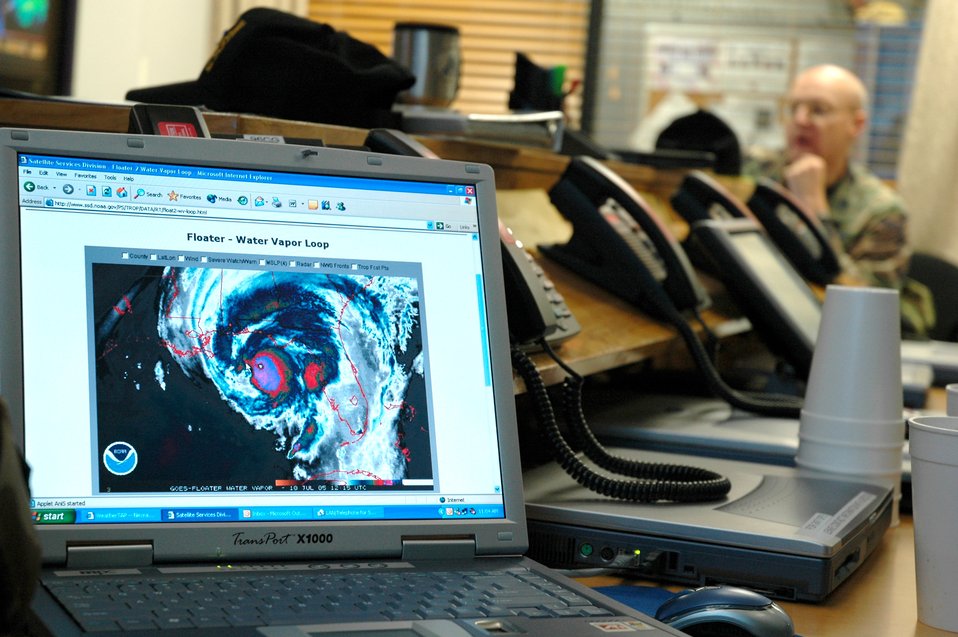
Hurricane response

The 46th Weather Squadron at Eglin Air Force Base, Fla., monitored Hurricane Dennis -- in July 2005 -- from the time it became a hurricane in the Caribbean Sea. Weather forecasters gave period updates to base battle staff members sheltered in the Air Armament Center headquarters building here. With hurricane season right around the corner, from June through November, Eglin held a three-day exercise May 15 through May 17, 2006, called